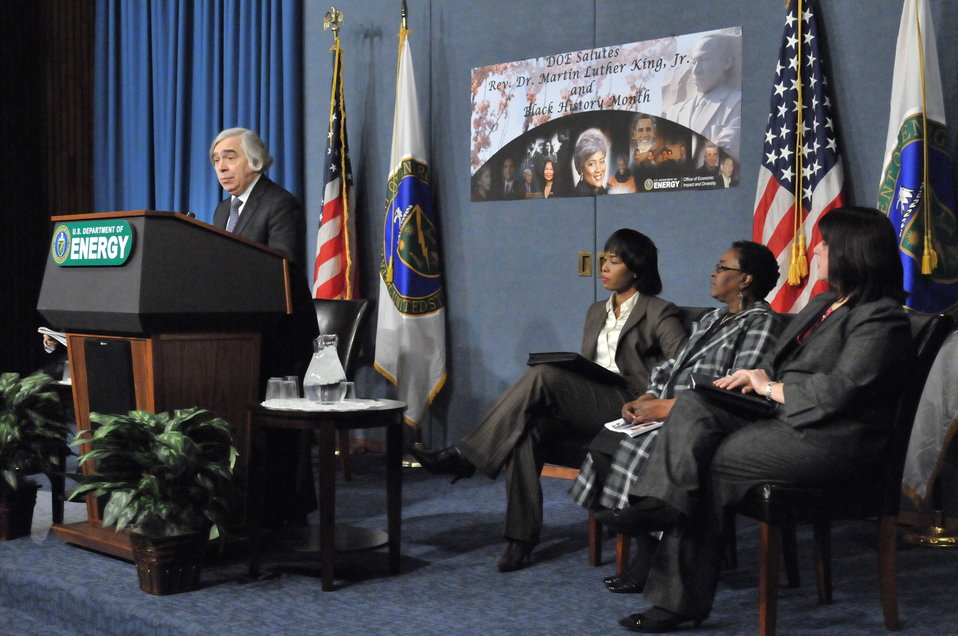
DEPARTMENT OF ENERGY -MARTIN LUTHER KING / BLACK HISTORY MONTH COMMEMORATIVE PROGRAM WITH DOE SECRETARY E. MONIZ IN ATTENDANCE